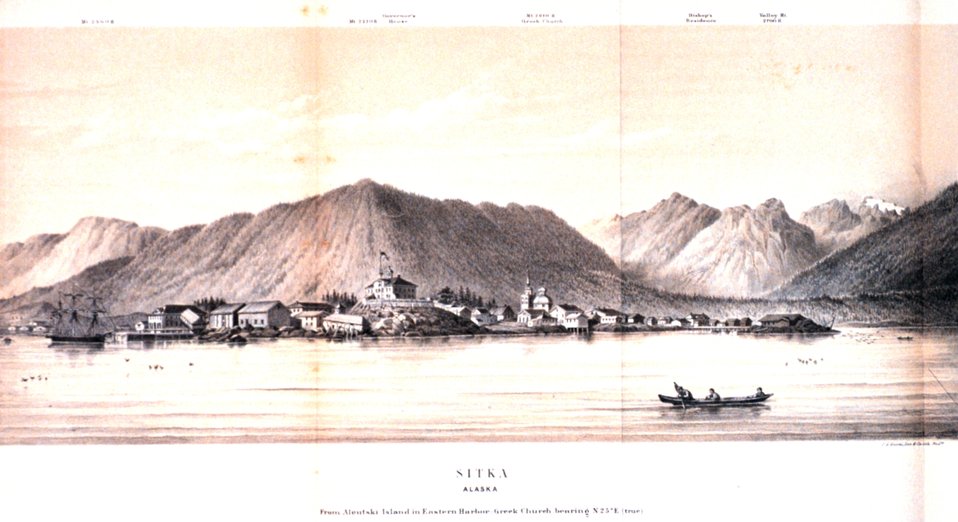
View of Sitka Harbor in: 'Coast Pilot of Alaska, (First Part,) ....' by George Davidson, 1869. P. 120. Library Call Number VK943 .N3 1st 1869.